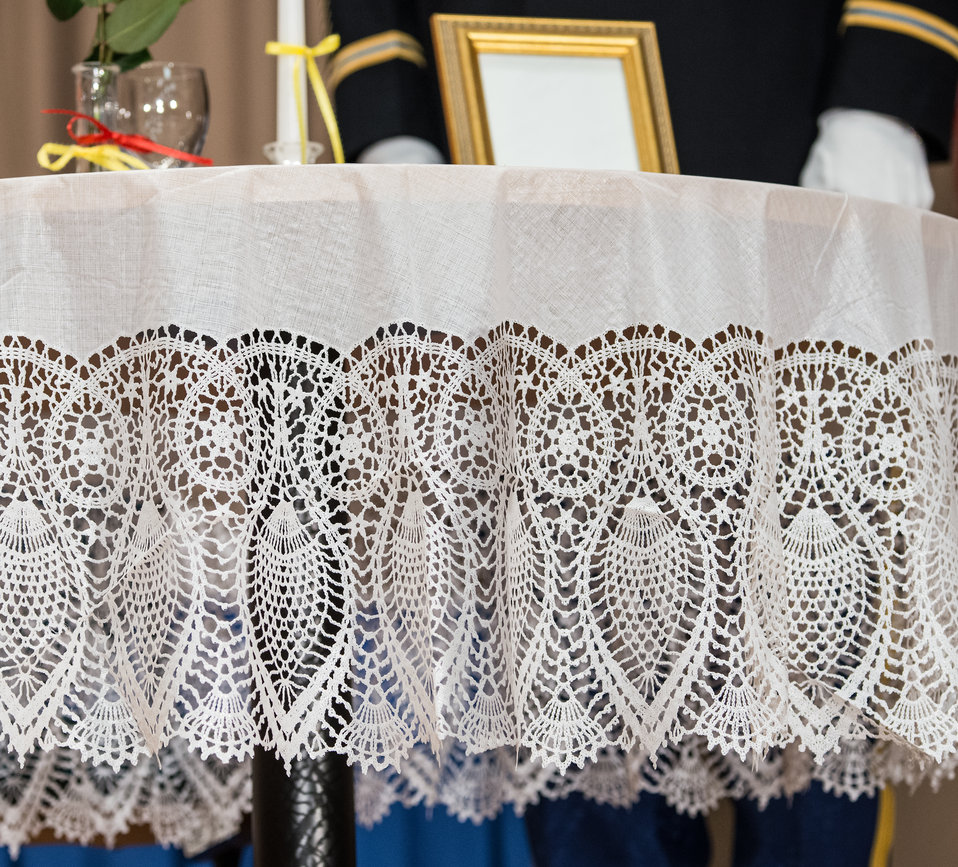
The POW/MIA Missing in Action Table and Honors Ceremony, reminds us that the white tablecloth symbolizes the purity of (POW/MIA's) motives when answering the call to duty, during the 2013 U.S. Department of Agriculture (USDA) Veterans’ Day Observance, whose theme is “VALOR, COURAGE, SACRIFICE – HONORING ALL WHO SERVED,” in Washington, DC, on Wednesday, November 20, 2013.